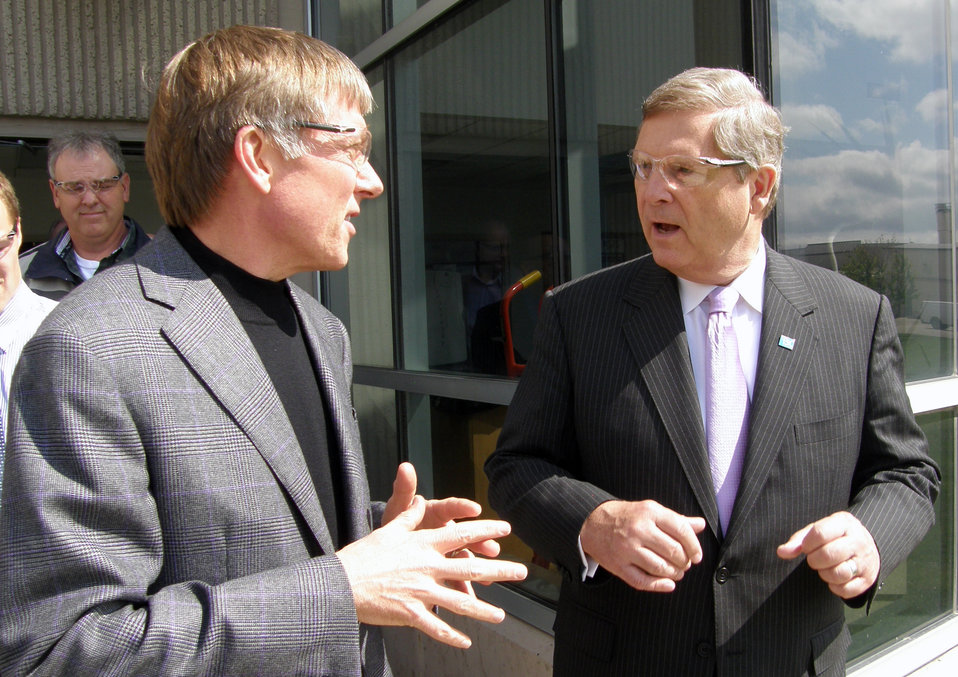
Agriculture Secretary Tom Vilsack toured Kemin Industries in Des Moines, IA on Friday, April 20, 2012. Kemin president and chief executive officer Dr. Chris Nelson discussed plant operations with Secretary Vilsack at the end of the tour. Kemin Industries is an innovative bioscience company that is using plant-based materials to manufacture ingredients used in dietary supplements and in personal care products.